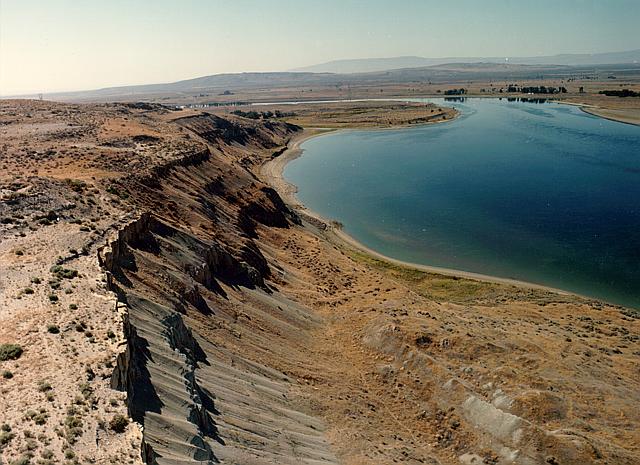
The Hanford Reach is the only free-flowing stretch of the Columbia River left in the United States. Researchers at Pacific Northwest National Laboratory study the wildlife that inhabit this area.